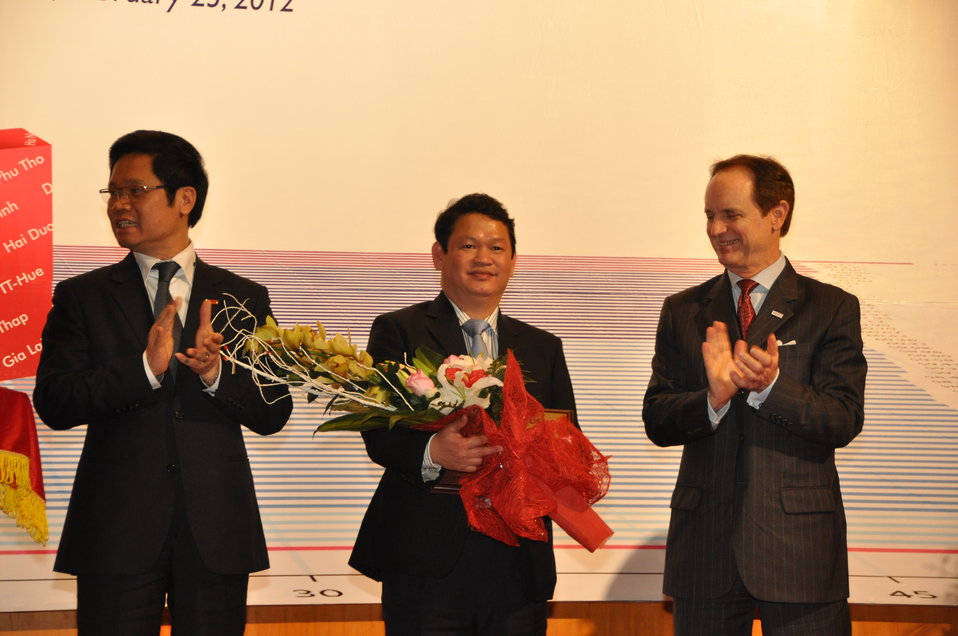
Provincial Competitiveness Index 2011 Launch